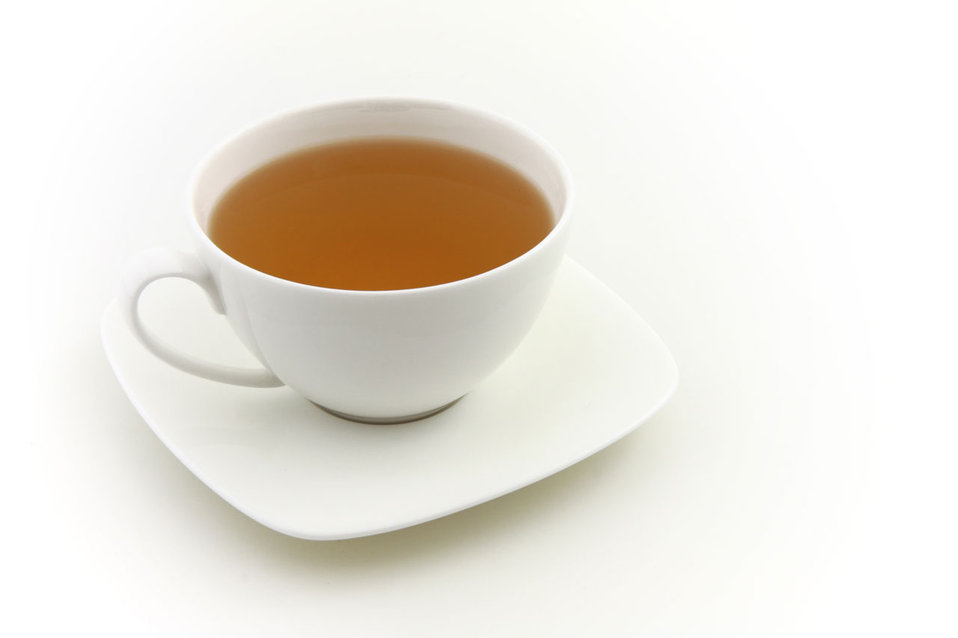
Cup of tea isolated on white background.